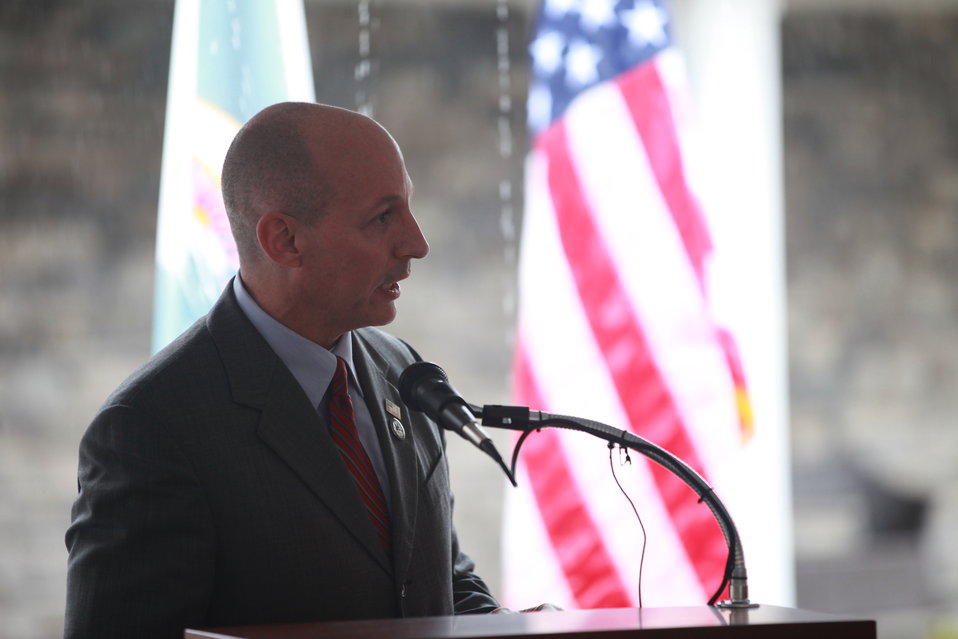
Assemblyman Dean Murray

Dean Murray, New York Assemblyman, 3rd Assembly District speaks at the Long Island National Wildlife Refuge Visitor Center Ribbon Cutting ceremony. He is interested in promoting the new visitor center on Long Island as part of the 'I Love New York' tourism campaign.